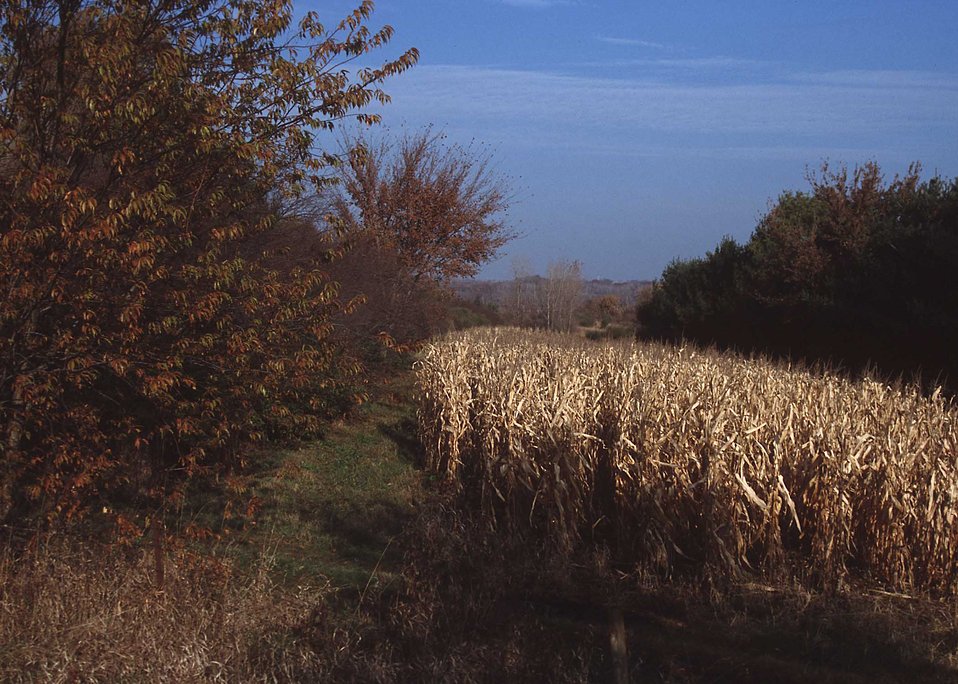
Landowners especially interested in wildlife may want to plant corn or other grain as food plots near escape cover asr winter food for wildlife.